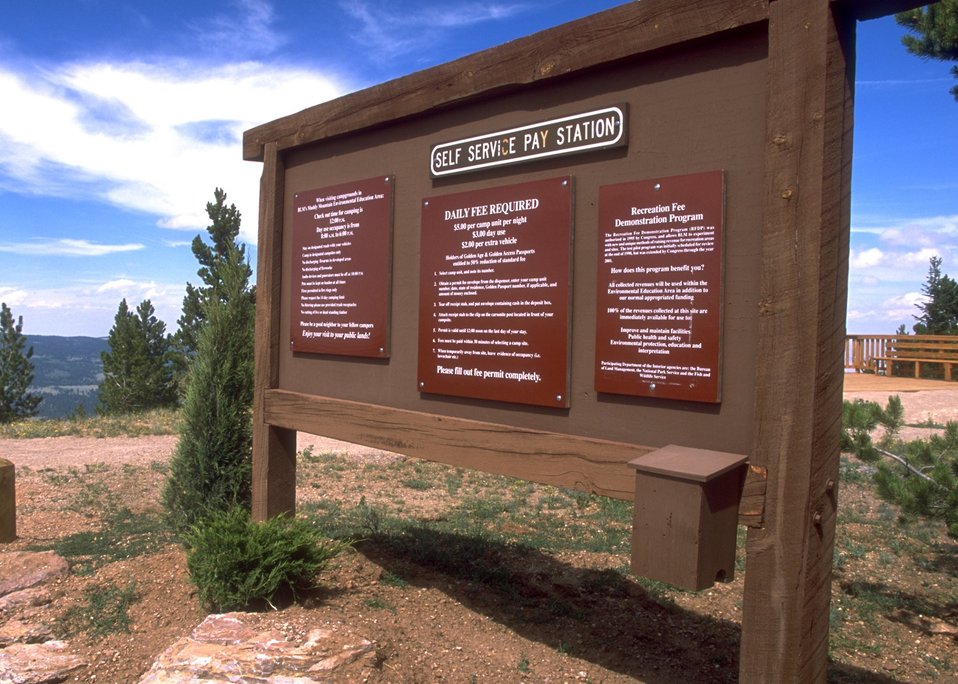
Muddy Mountain Recreation Area, Casper Field Office.